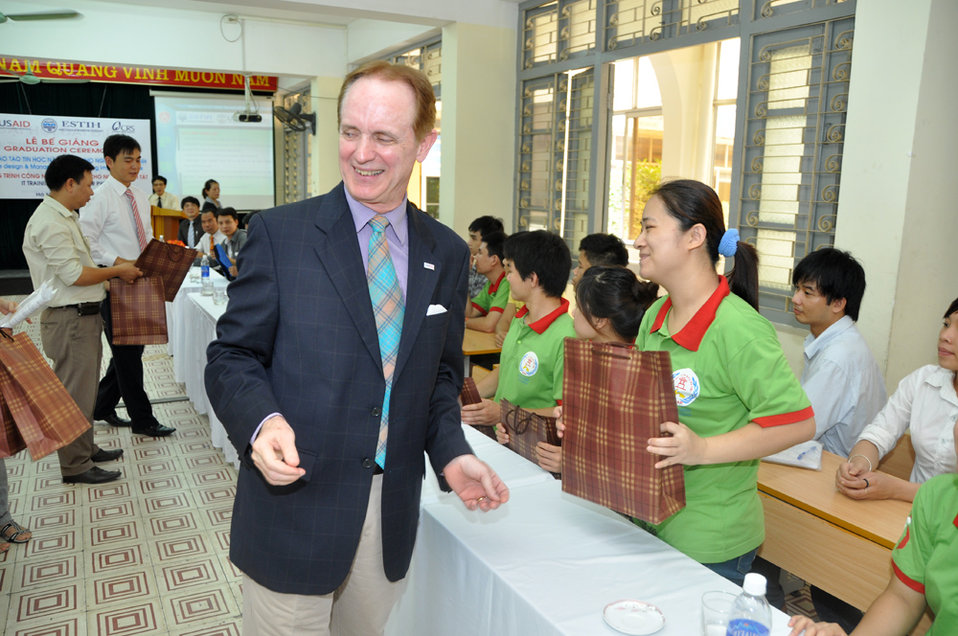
USAID Mission Director Francis Donovan participates in graduation of IT students in Hanoi on June 22, 2011.